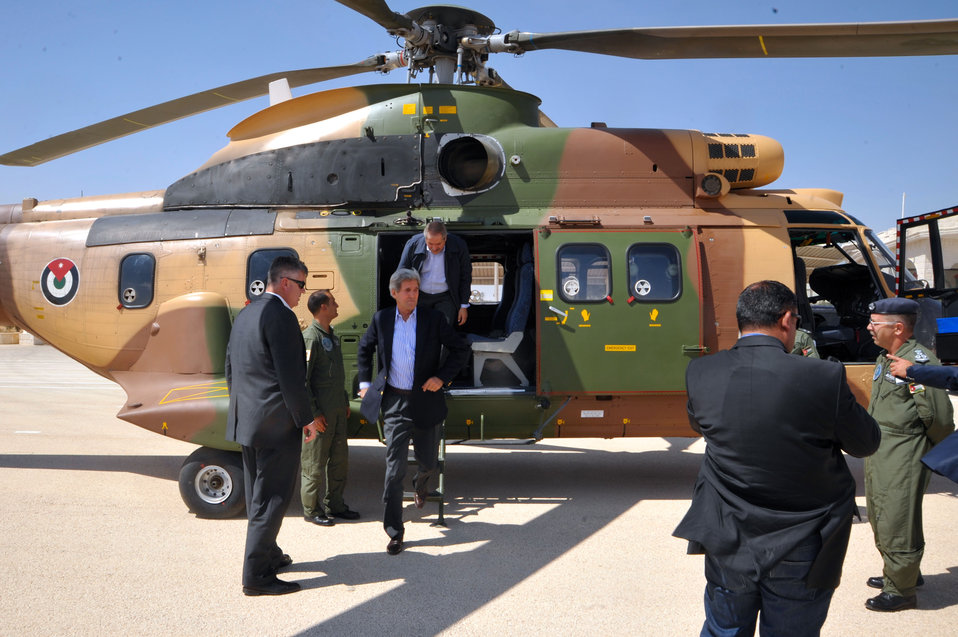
Secretary Kerry Prepares To Visit the Za'atri Refugee Camp

U.S. Secretary of State John Kerry disembarks from a helicopter at Mafrar Airbase in Jordan before visiting the Za'atri camp for Syrian refugees on July 18, 2013.